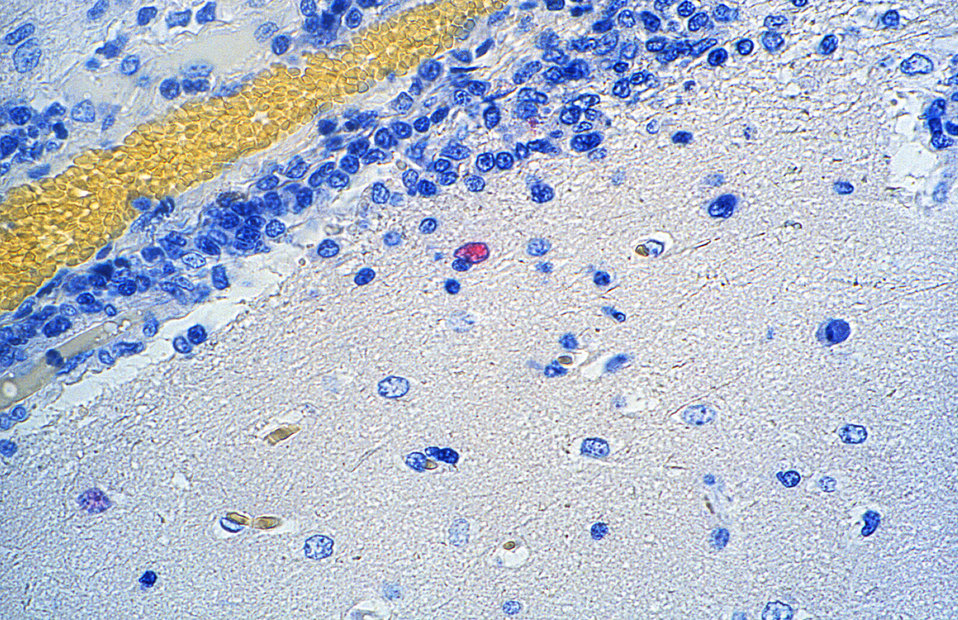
This photomicrograph of an unknown animal central nervous system (CNS) tissue specimen, revealed some of the cytoarchitectural histopathologic changes associated with a Nipah virus infection.